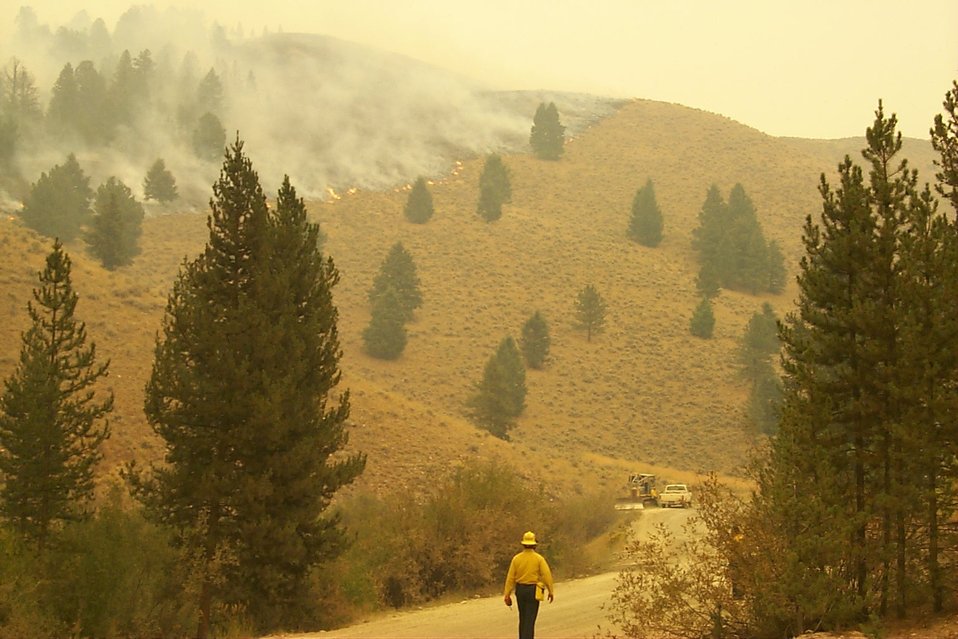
Fire Clearwater Fire Salmon Field Office USRD Upper Snake River District